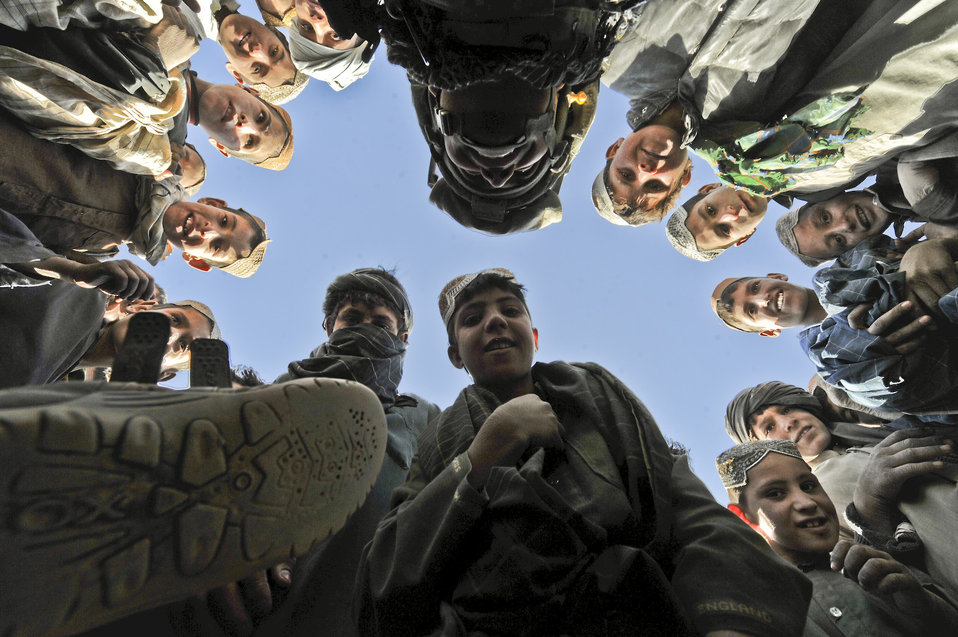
Behind the lens: Combat camera in Afghanistan

Tech. Sgt. Efren Lopez plays with Afghan children during a medical capabilities operation Nov. 18, 2009, in Zakuzi Village, Zabul province, Afghanistan. MEDCAPs provide medical treatment to local Afghans as part of Operation Enduring Freedom. Sergeant Lopez is a photographer with 4th Combat Camera Squadron, March Air Reserve Base, Calif.